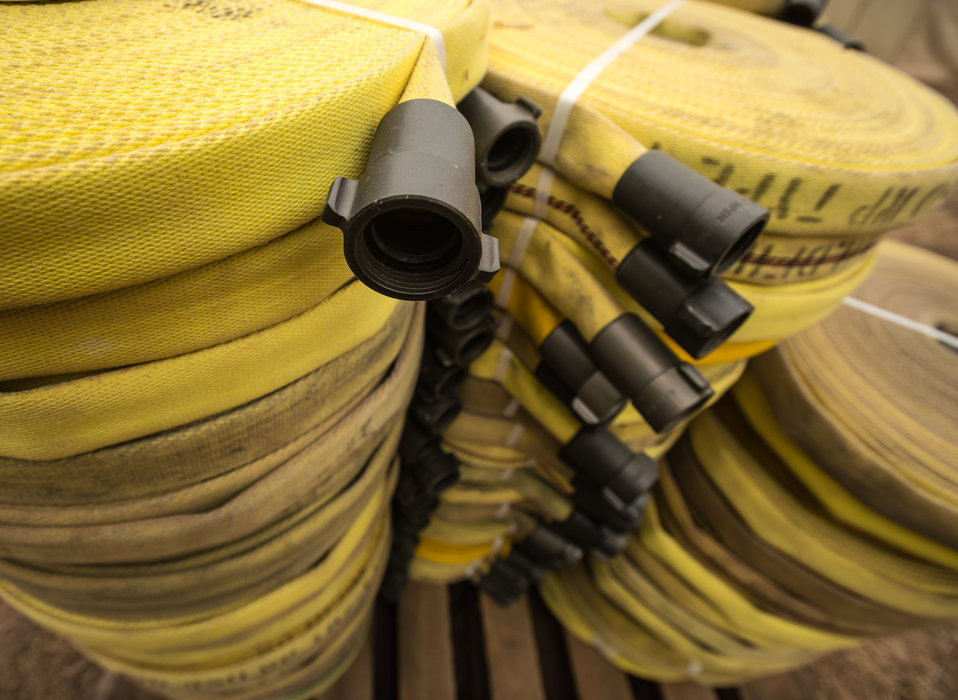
Serviceable hand lines (fire hose) available for firefighters at the Salmon River Complex Fire burning northwest of Sawyers Bar and west of Etna and Yreka, CA in the Klamath National Forest, on Tuesday, Aug. 6, 2013. It is vital that when a firefighter needs fire resistant clothing, a Mccloud Tool, Pulaski Axe, Combi Tool, pumps, connectors and hoses to draw water from a portable reservoirs to pressurize hand line (fire hoses), they go to this centralized point to get readily available item for issue or replacement as needed. These supplies have been shipped from the National Interagency Supply Cache System depots and/or other caches to this and other fires across the nation.